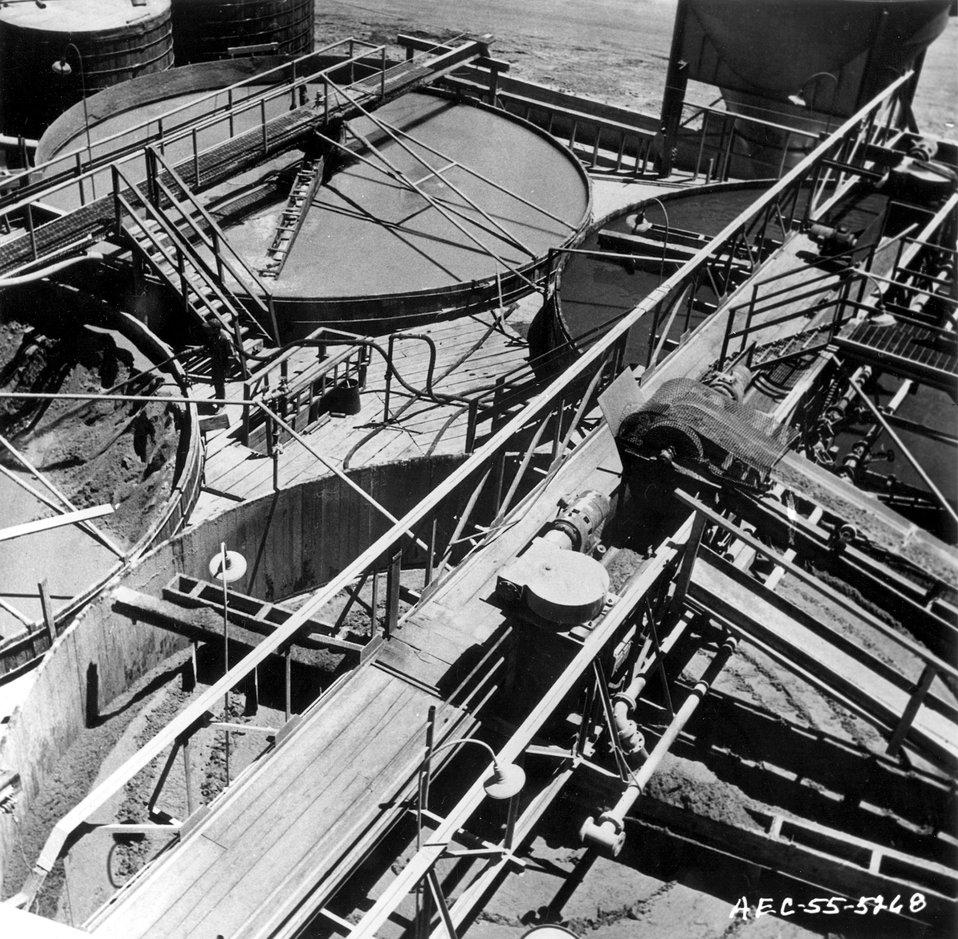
Uranium ore is washed in washing vats prior to processing into 'yellow cake' for shipment to the Atomic Energy Commission. c. 1955